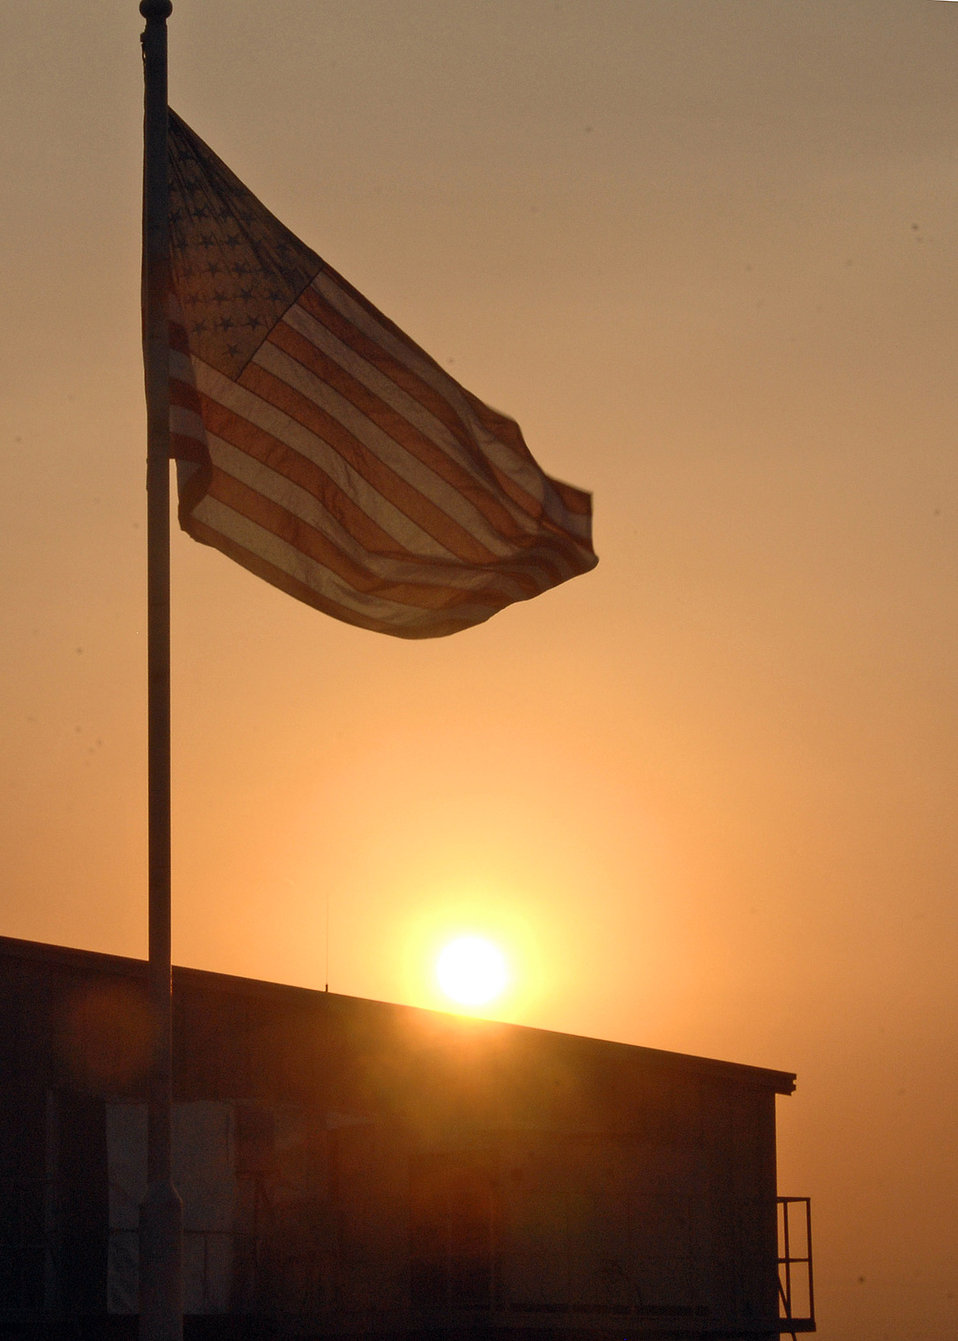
Remembering those who served

The American flag is raised during the 386th Air Expeditionary Wing Veterans Day Reveille Ceremony Nov. 11 at an air base in Southwest Asia.